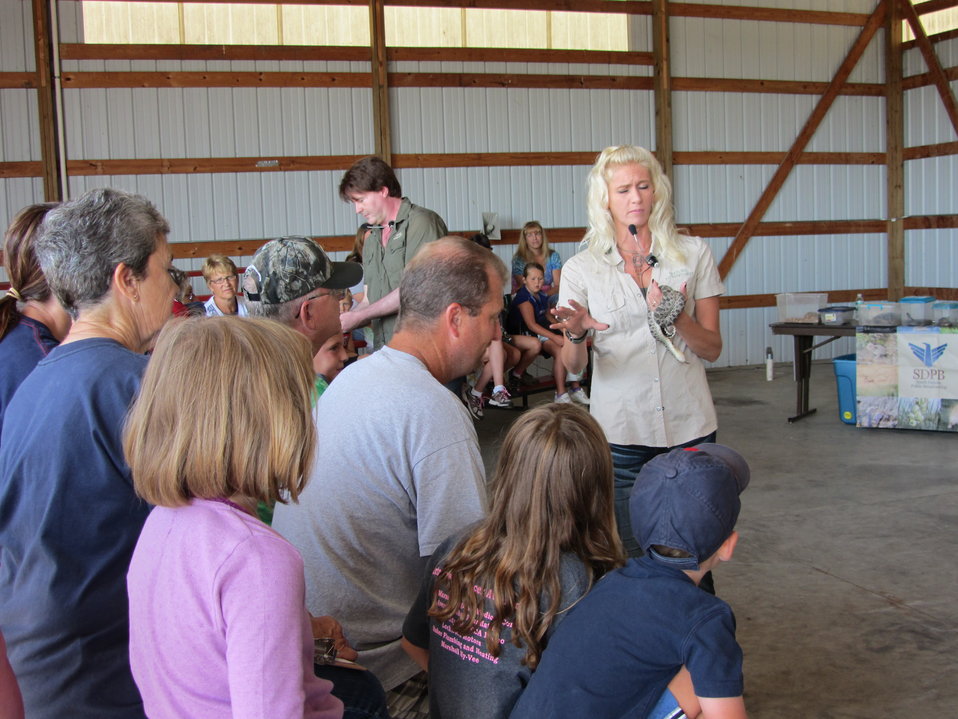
2011 Huron Prairie Fest